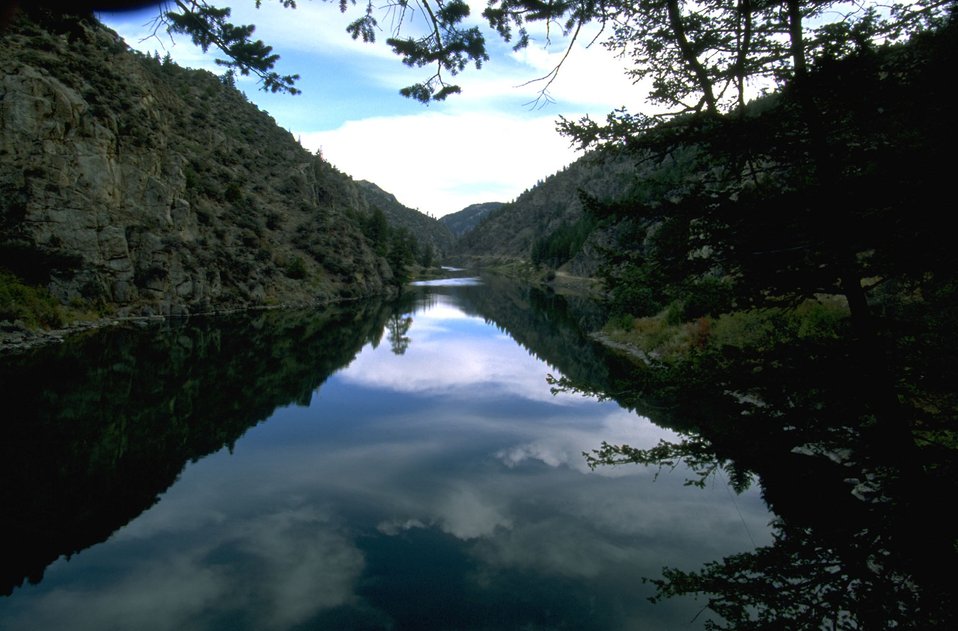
Reflection of clouds on calm water